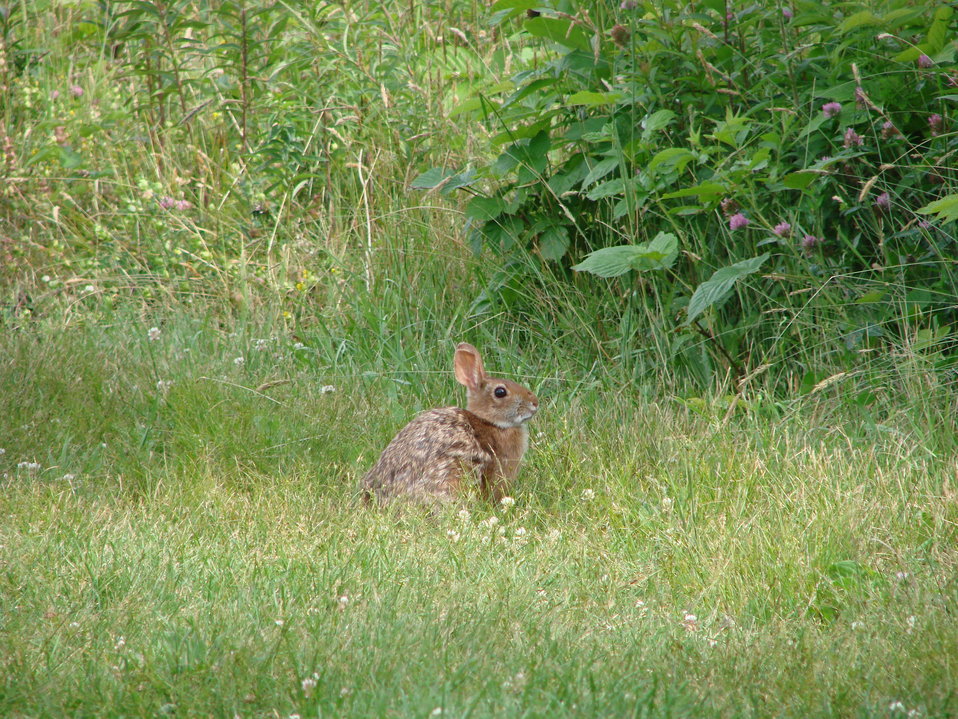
New England cottontail at Crescent Beach State Park in 2010.